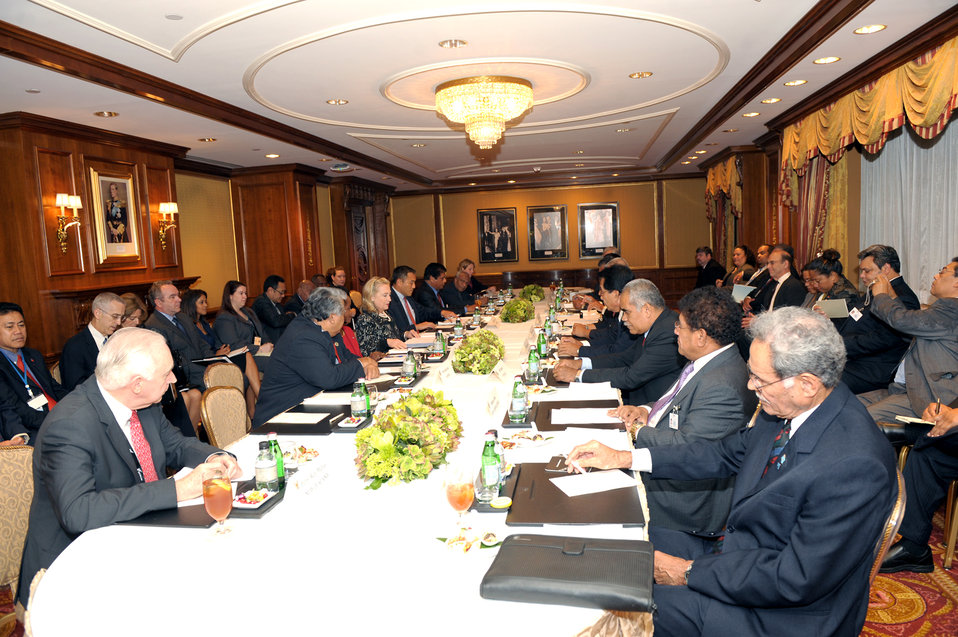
Secretary Clinton Participates Meets With Leaders From Pacific Island Nations

U.S. Secretary of State Hillary Rodham Clinton meets with leaders from Pacific Island nations at the Waldorf-Astoria in New York, New York, on September 23, 2011.